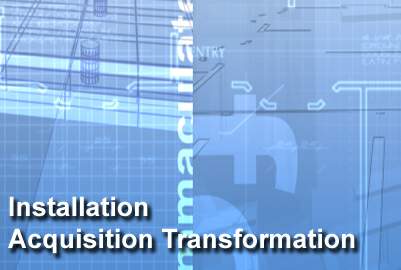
Installation Acquisition Transformation revises implementation plan

Air Force officials here recently completed a comprehensive restructuring of installation acquisition within the continental United States, dubbed Installation Acquisition Transformation, and adopted a revised implementation strategy.